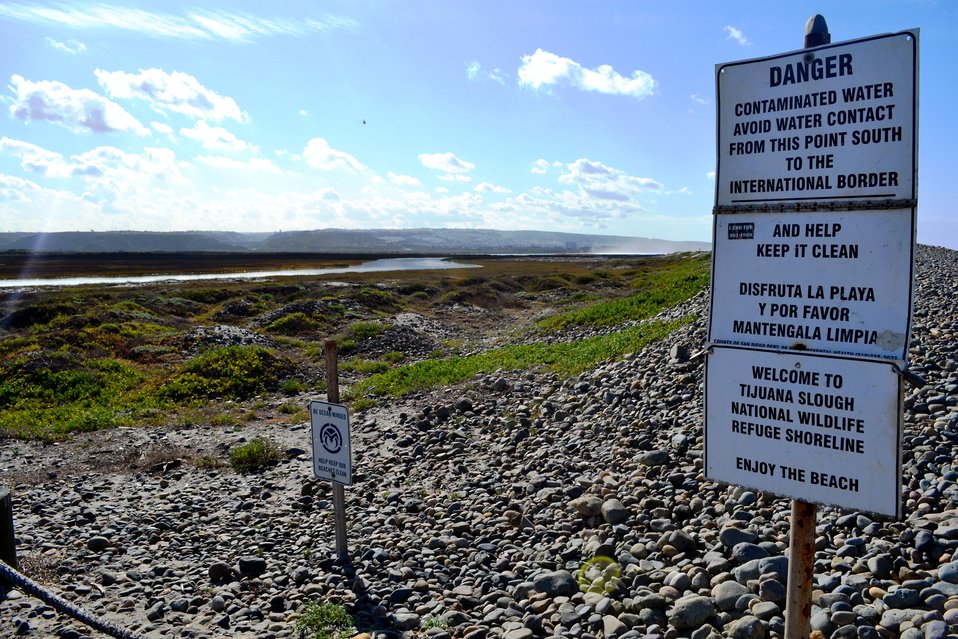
Entrance to the beach on the Tijuana Slough NWR

At times, during high tides or heavy rains, warning signs are posted to caution visitors to the beach from entering the water